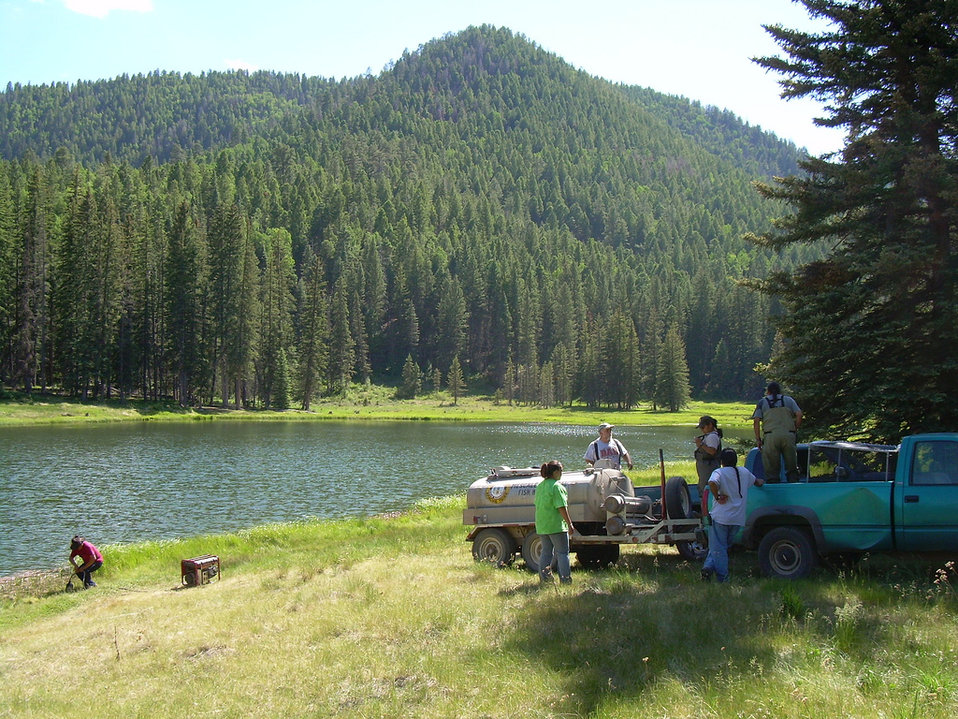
Sacred Lands, Sacred Trout

Biologists with the New Mexico Fish and Wildlife Conservation Office and the Santa Clara Pueblo ready themselves to gather Rio Grande cutthroat trout in northern New Mexico. Chris Kitcheyan/USFWS.